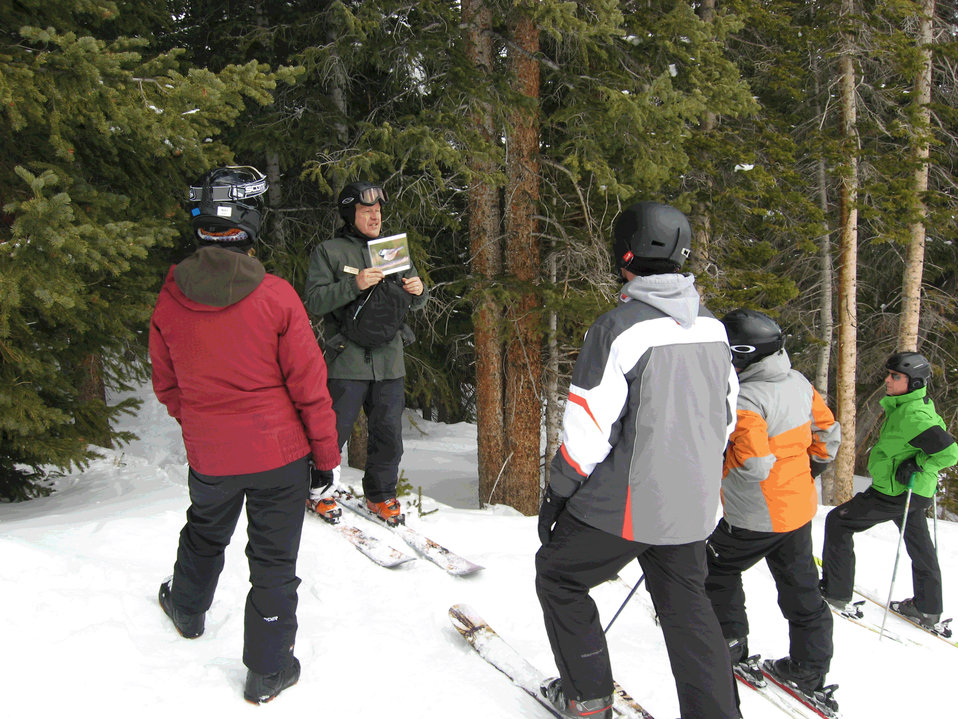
Valentine loveland ski area ski with a ranger

Volunteer snow ranger Conradt Fredell shares his love of skiing and the beautiful landscape of the Arapahoe National Forest, CO, by taking Loveland Ski Area visitors on an educational tour. The ski area is entirely on U.S. Forest Service land.